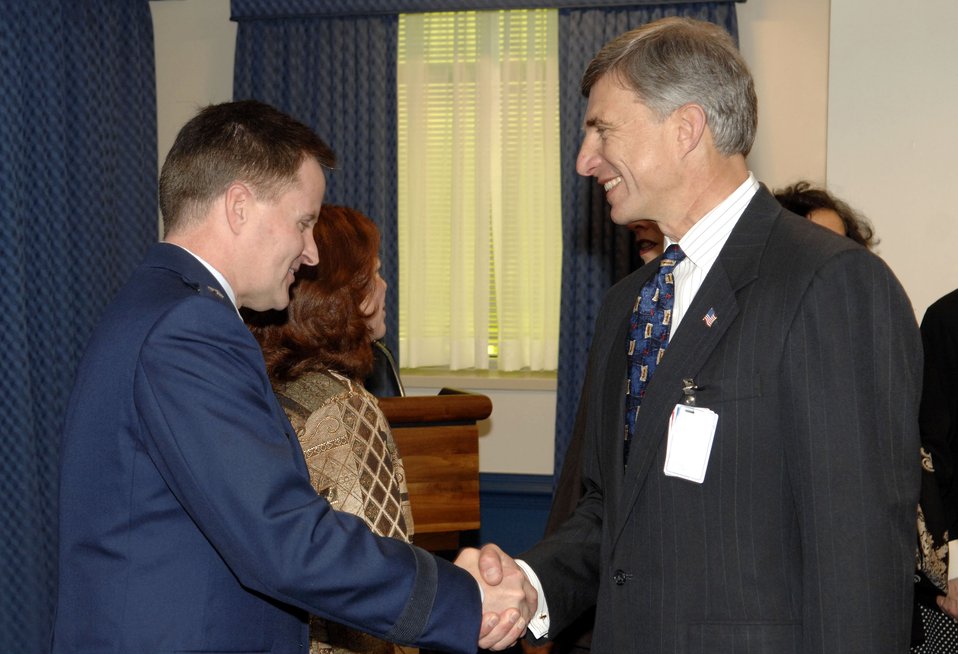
General, spouse receive O'Malley award

Maj. Gen. William T. Lord and his wife, Cynthia, are congratulated by Undersecretary of the Air Force Dr. Ronald M. Sega after receiving the O'Malley Award from Air Force Chief of Staff Gen. T. Michael Moseley Nov. 15 at the Pentagon. The award is given to the wing commander and spouse who were the most involved in their community. General Lord was the base commander of Keesler Air Force Base, Miss., where he dealt with four hurricanes to include Katrina and Rita that devasted the Gulf Coast.